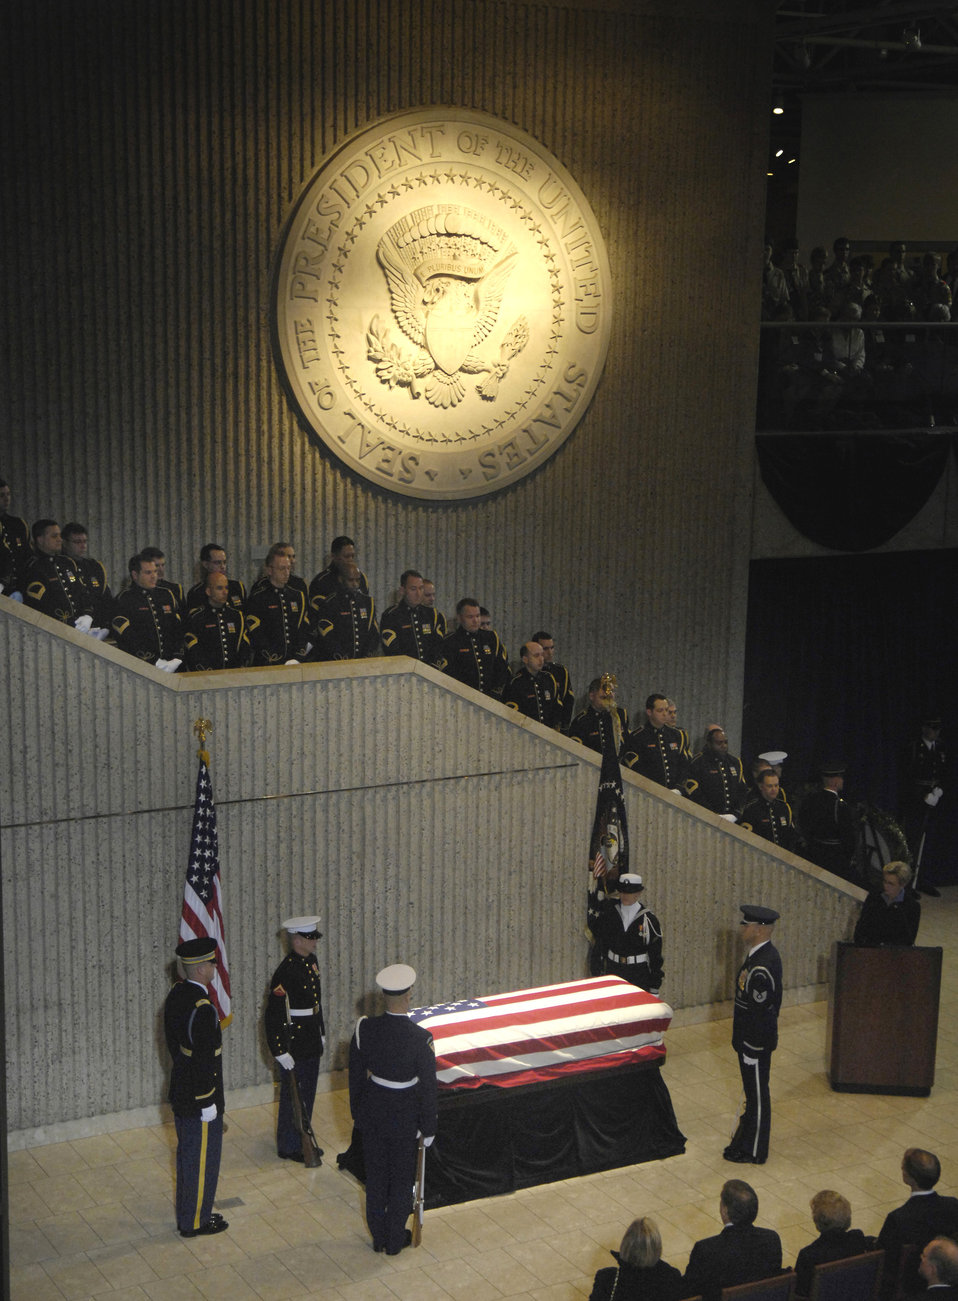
Presidential arrival

The casket carrying former President Gerald R. Ford arrives at the Gerald R. Ford Presidential Library and Museum Jan. 2 in Grand Rapids, Mich.